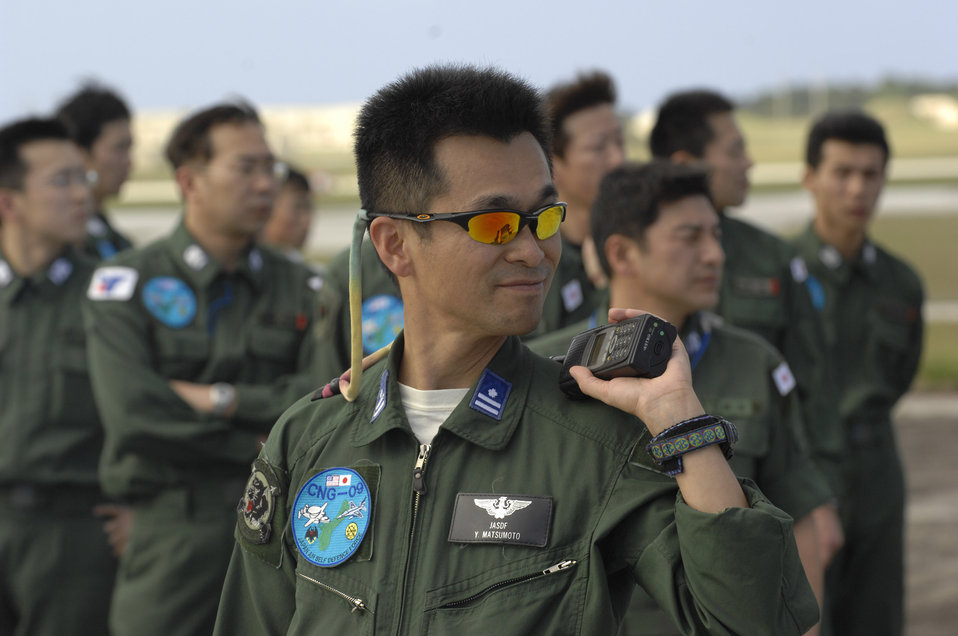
Japan forces arrive in Guam for joint exercise

Japan Air Self Defense Force members wait outside of their C-130 after arriving Jan. 27 at Andersen Air Force Base, Guam. More than 60 JASDF members arrived in three C-130s to participate in Exercise Cope North 09-1, a regularly scheduled exercise scheduled for Feb. 2 through 13. Cope North is designed to enhance U.S. and Japanese air operations in defense of Japan. JASDF F-2s from Tsuiki Air Base, Japan, and E-2Cs from Misawa AB, Japan, will join forward deployed U.S. Air Force F-16 Fighting Falcons from Eielson Air Force Base, Alaska, B-52 Stratofortress' currently deployed to Andersen AFB, and Navy EA-6B from VAQ-136 Carrier Air Wing Five, Atsugi, Japan, will participate in this year's exercise with a focus on interoperability.